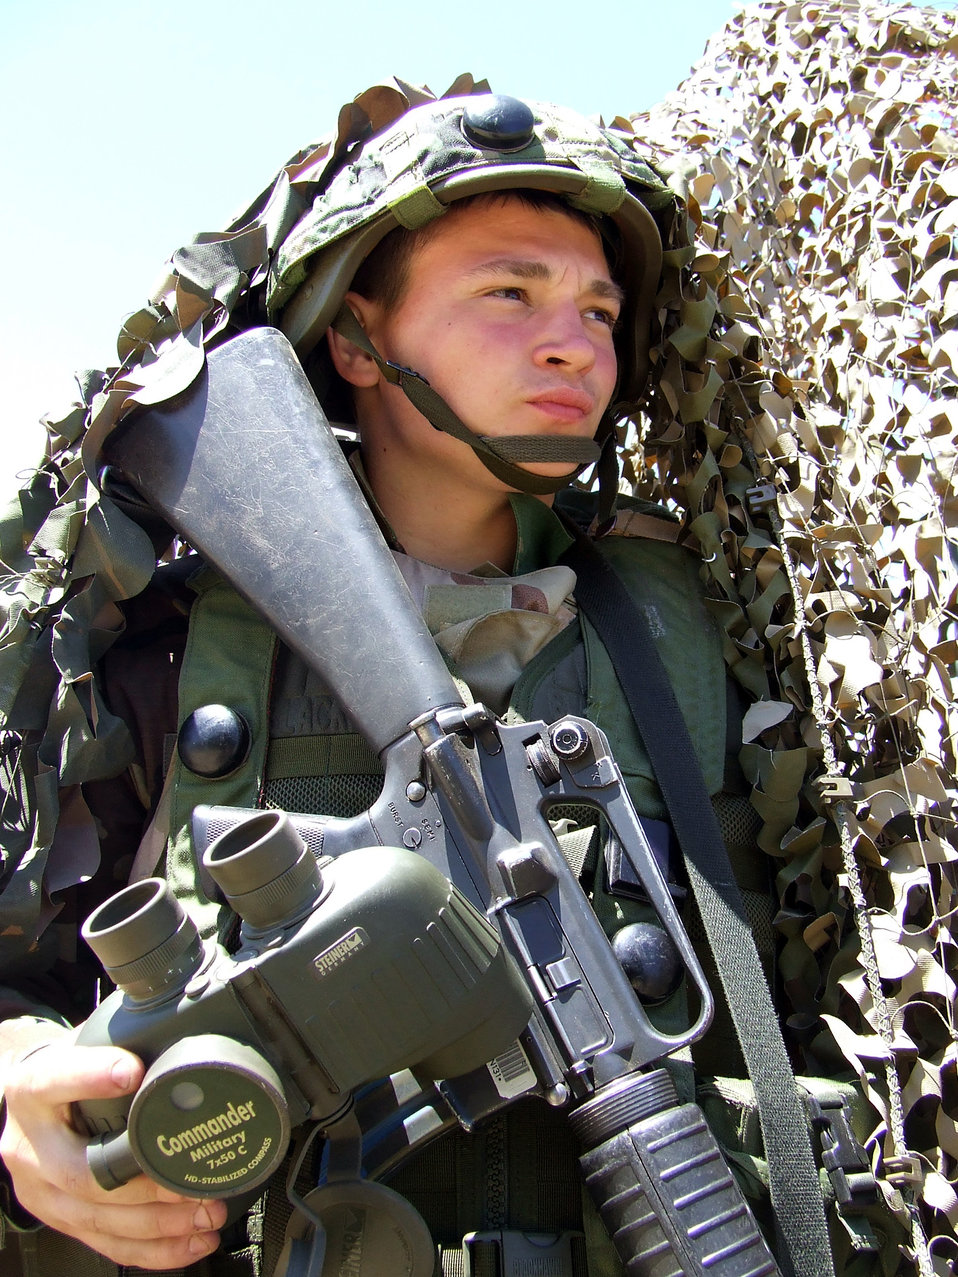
Eagle Flag takes flight

Airman Thomas Stevens keeps a look out for